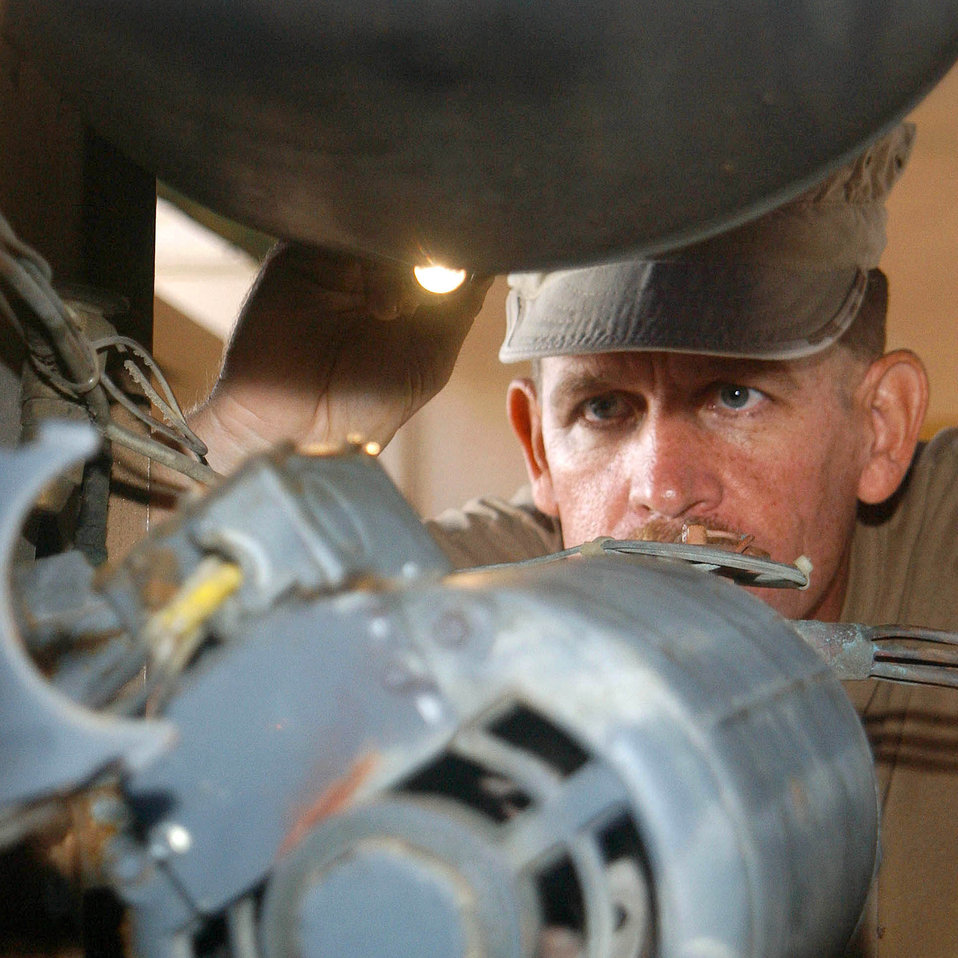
Engineers at work

SOUTHWEST ASIA -- Tech. Sgt. Mark Flanders inspects a wiring location prior to removing the evaporator motor in an environmental control unit here. Sergeant Flanders is an Air Force Reservist deployed to the 380th Expeditionary Civil Engineer Squadron from Selfridge Air National Guard Base, Mich.